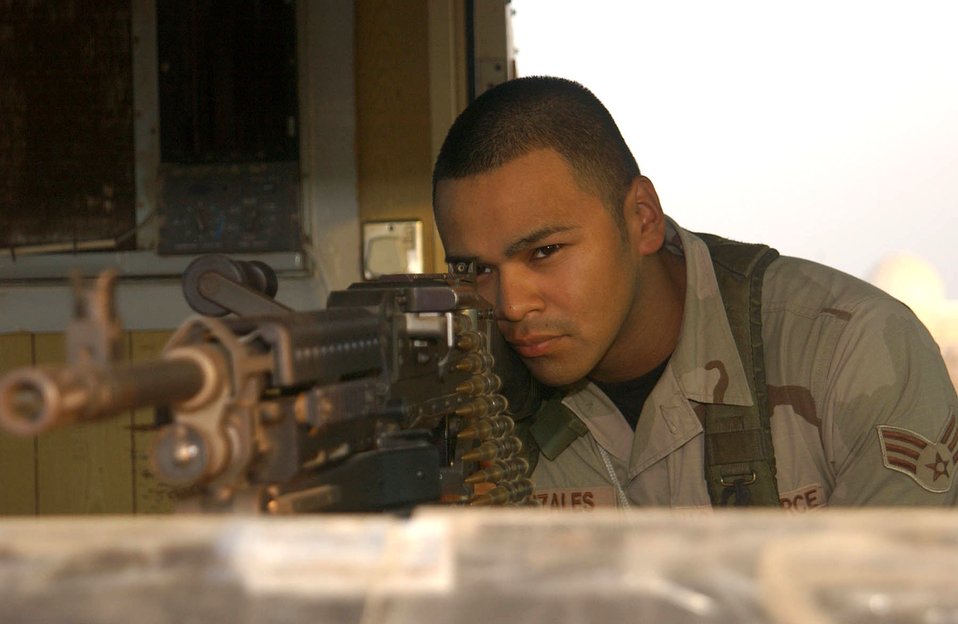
Keeping watch

SOUTHWEST ASIA (AFPN) -- Senior Airman Andrew Gonzales looks down the sights of an M-240B machine gun from a guard tower at this desert air base. The Airman is one of many members of the 380th Expeditionary Security Forces Squadron responsible for guarding the installation and safeguarding people and assets. He deployed from the 436th Security Forces Squadron at Dover Air Force Base, Del.